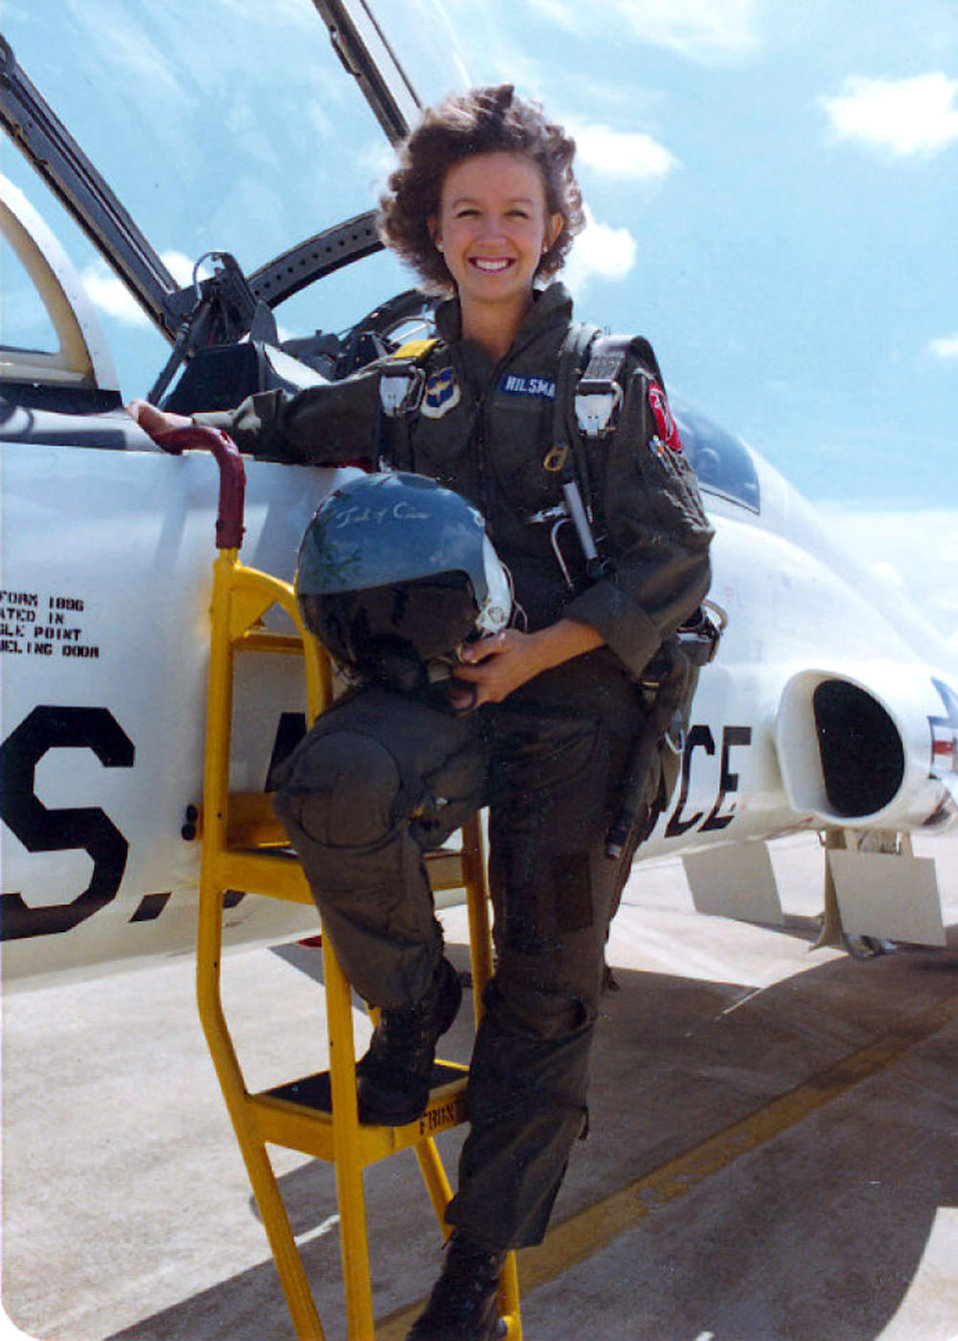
A woman of many firsts

Brig. Gen. Allison Hickey, then 2nd Lt. Allison Hilsman, attended pilot training at Columbus Air Force Base, Miss. She would later go to combat crew training for the KC-135 tanker.